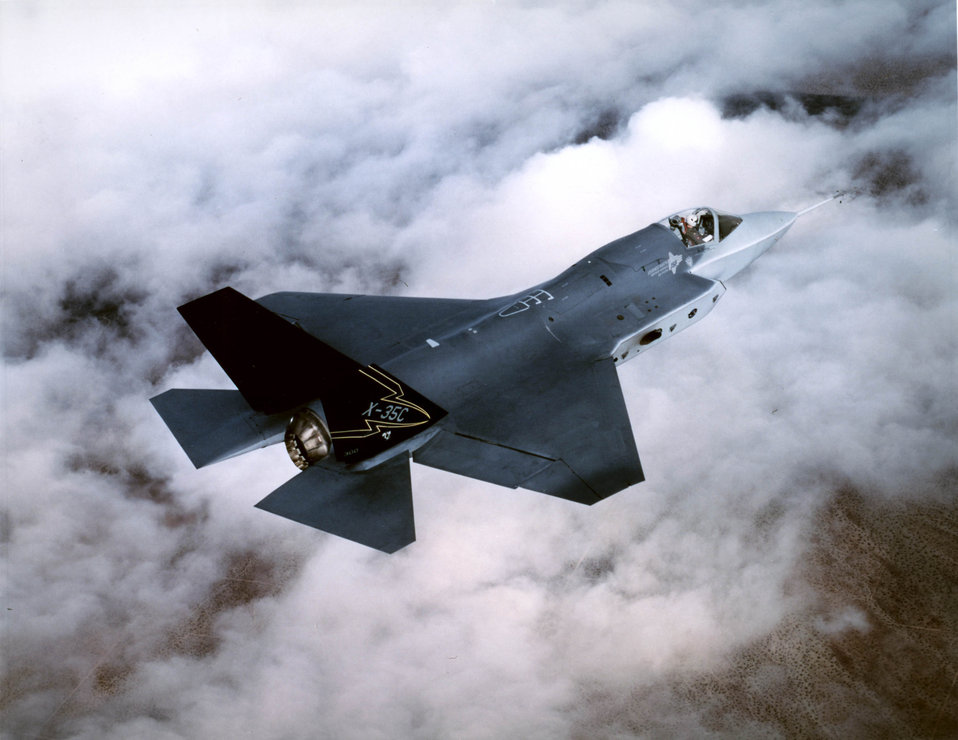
LOCKHEED MARTIN X-35, Joint Strike Fighter

The X-35, Joint Strike Fighter from Lockheed Martin nears completion of flight testing at Edwards Air Force Base, Calif., in 2001. The JSF is being built in three variants: a conventional take-off and landing aircraft (CTOL) for the US Air Force; a carrier based variant (CV) for the US Navy; and a short take-off and vertical landing (STOVL) aircraft for the US Marine Corps and the Royal Navy.